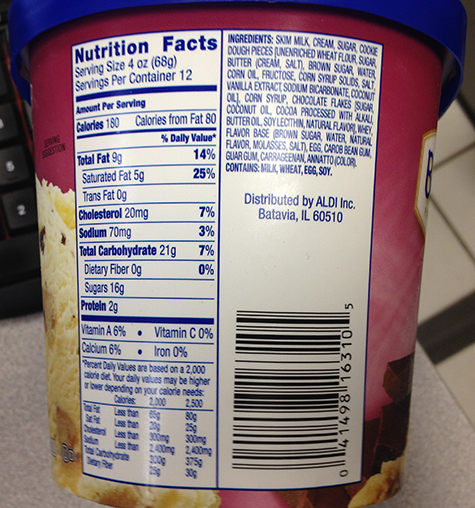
RECALLED – Belmont Chocolate Chip Cookie Dough Ice Cream

March 5, 2014 – Product Recall – House of Flavors Issues Voluntary Recall Due to Possible Undeclared Nut Allergen in Belmont Chocolate Chip Cookie Dough Ice Cream.